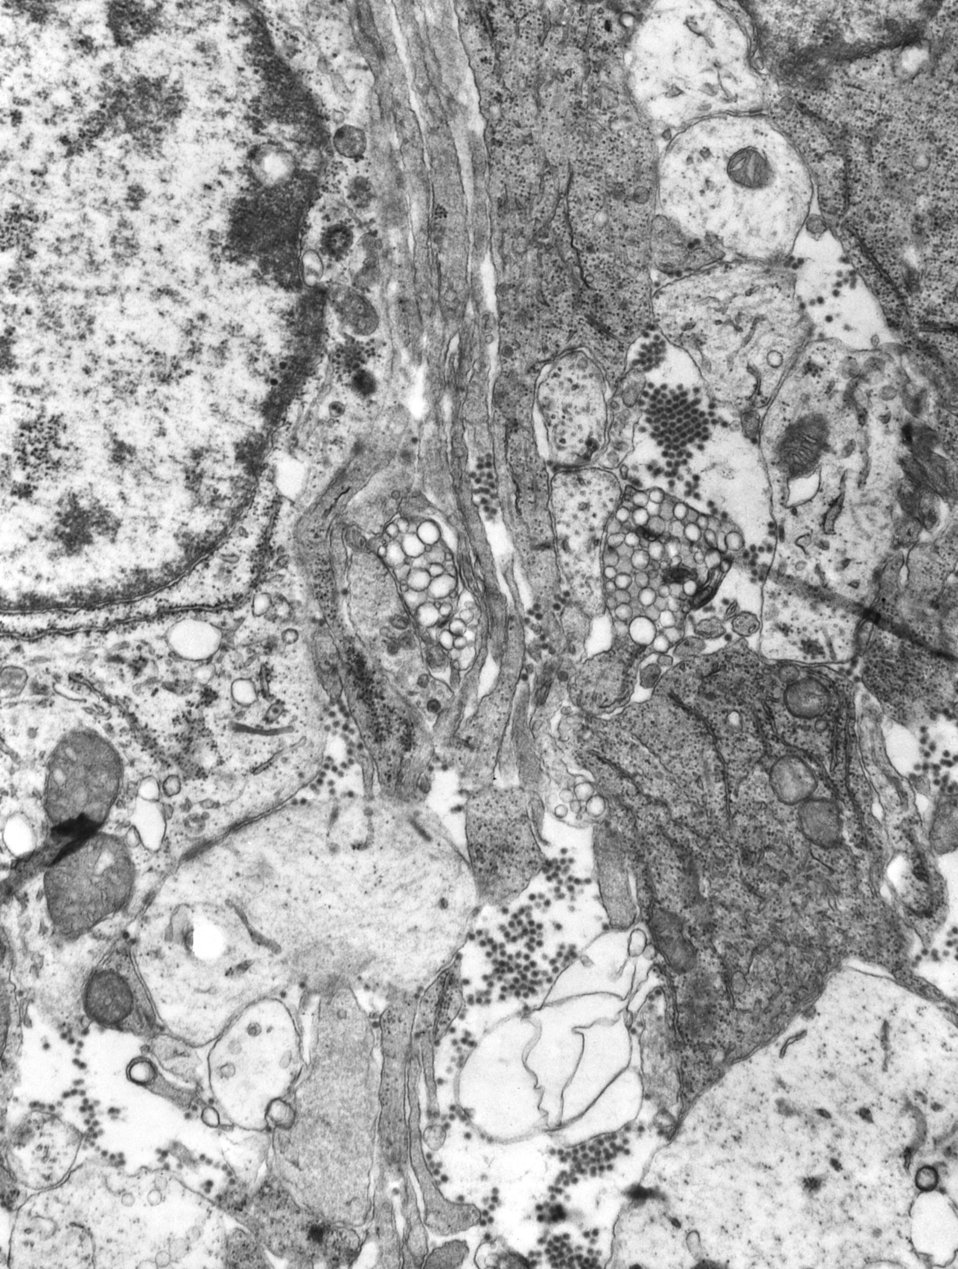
This 1975 transmission electron micrograph (TEM) revealed the presence of a number of Eastern Equine Encephalitis (EEE) virus virions in this specimen of central nervous system tissue. EEE is an zoonotic arbovirus, which means that it's spead to human beings through the bite of an infected arthropod, which in this case, is a mosquito. EEE virus (EEEV) occurs in the eastern half of the United States where it causes disease in humans, horses, and some bird species. Because of the high mortality rate, EEE is regarded as one of the most serious mosquito-borne diseases in the United States. EEE is a Togaviridae virus family member, and the genus Alphavirus.